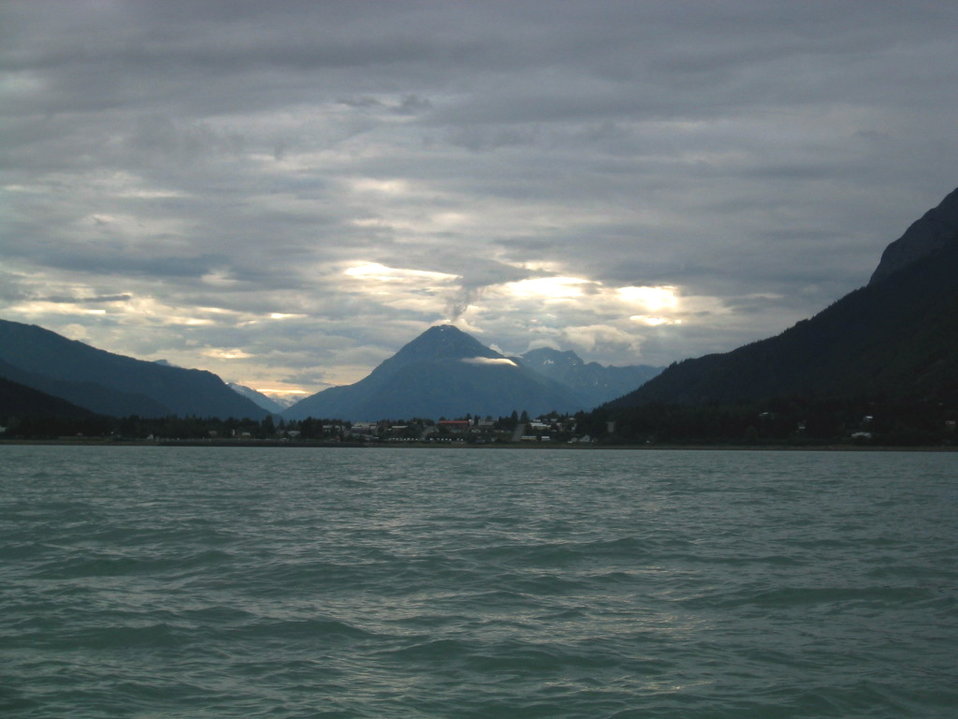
View of Haines, Alaska Photo by Micah Bochart en:Category:Images of Alaska